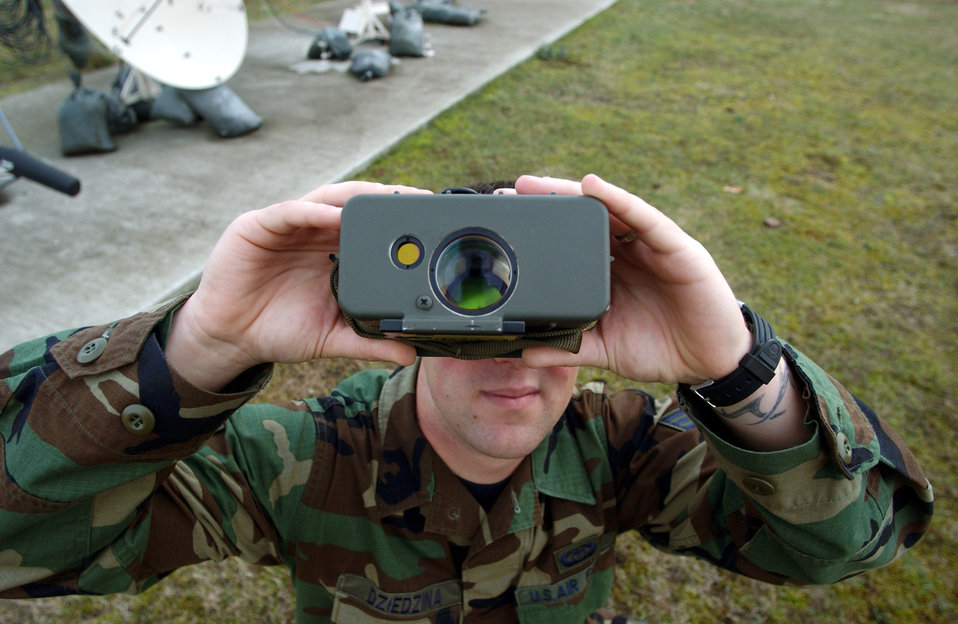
Cloudy Vision

ROYAL AIR FORCE LAKENHEATH, England -- Senior Airman James Dziedzina uses a tactical cloud laser range finder Nov. 13 to determine if the clouds are too low for aircraft to safely take off and land. This is one of many pieces of equipment that help provide direct force-enhancement support to the wing. Dziedzina is a weather forecaster with the 48th Operation Support Squadron here.